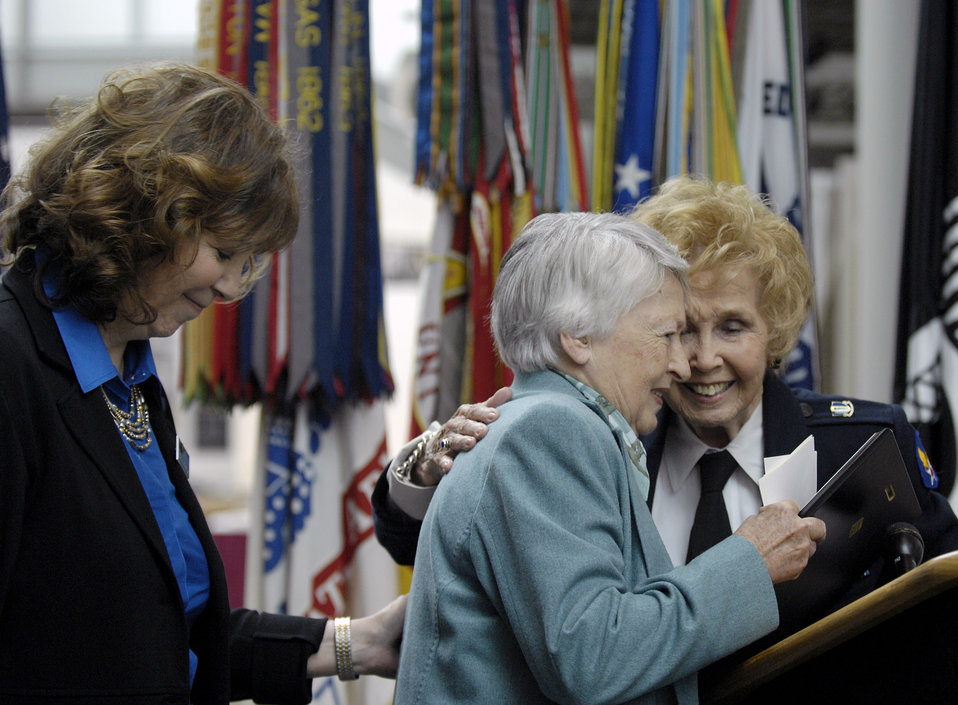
WASP exhibit opens in Arlington

Nancy Parrish (left), director of Wings Across America, enjoys the moment as retired Brig. Gen. Wilma Vaught receives a gift from Deanie Parrish, a World War II Women Airforce Service Pilot, during the